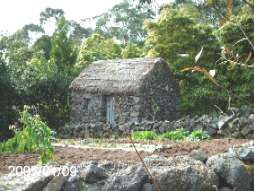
Português: Palheiro, Açores, Portugal.